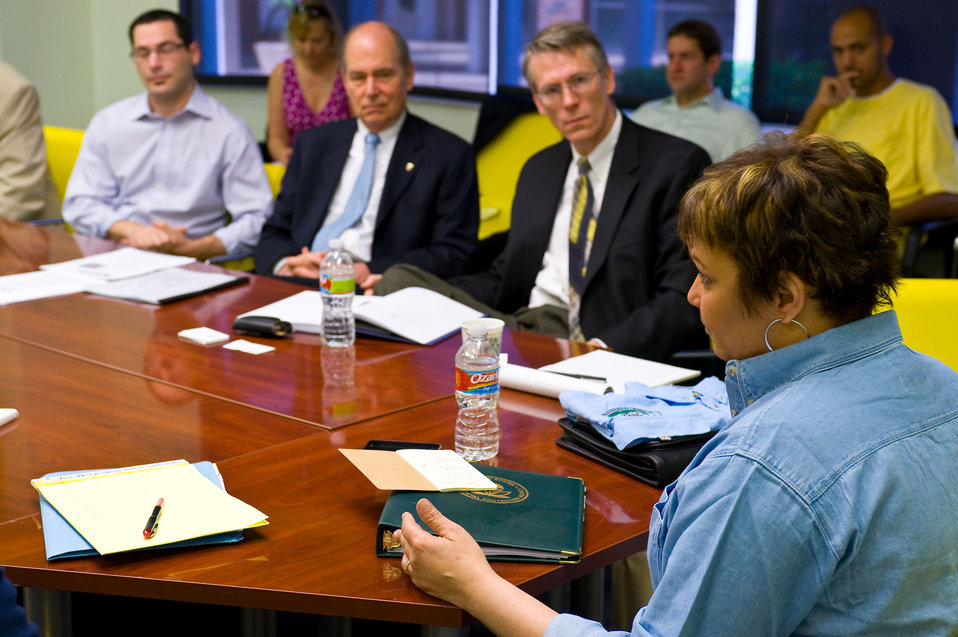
EPA Administrator Meets with Gulf Region Scientists

May 11, 2010 - EPA Administrator Lisa P. Jackson meets with Tulane University officials to discuss environmental and human health impact of the ongoing BP oil spill.